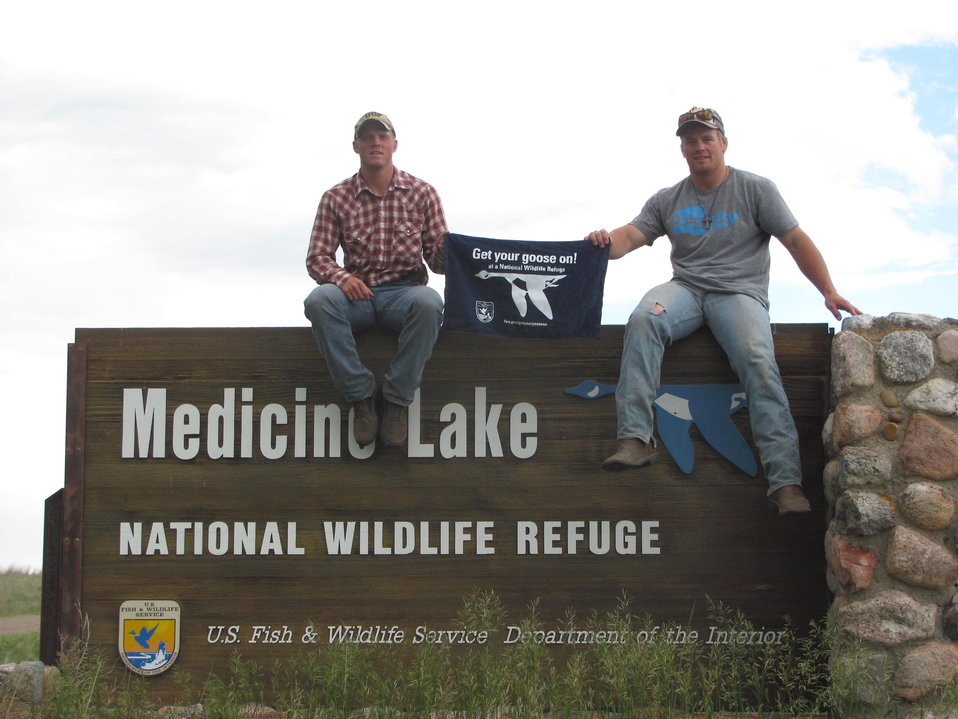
Get Your Goose On!

The Benton Lake National Wildlife Refuge traveling strike team Gets Their Goose On! at Medicine Lake.